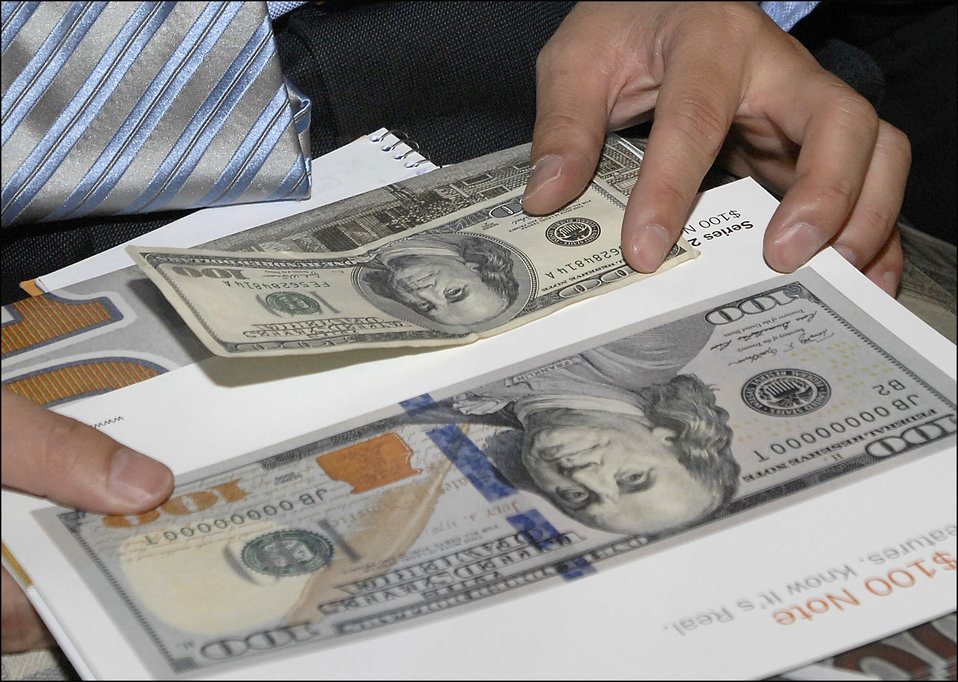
Unveiling of new $100 note, 4/21/2010

The new and old $100 note.